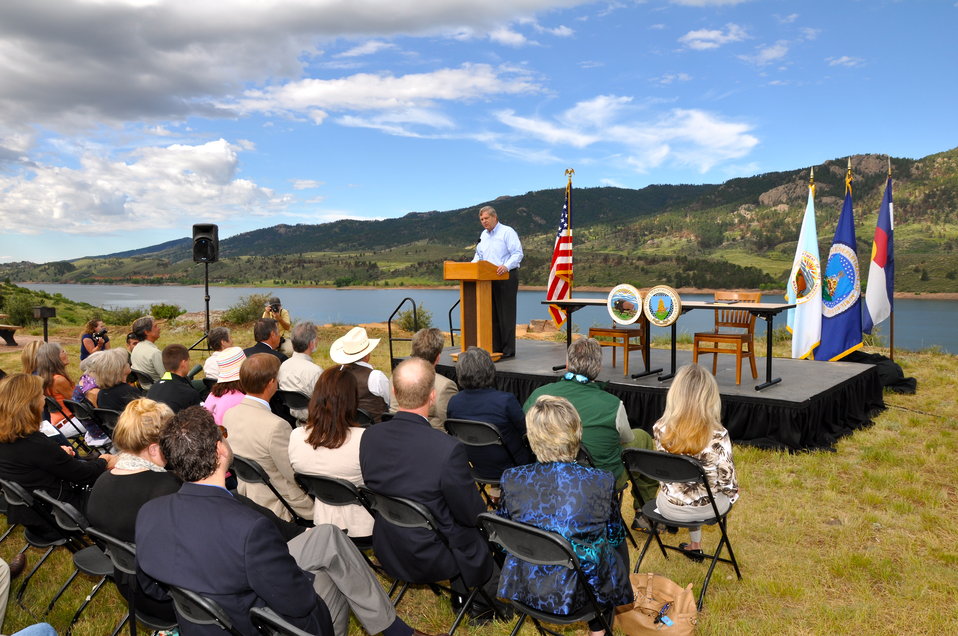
Agriculture Secretary Tom Vilsack speaks at the Memorandum of Understanding (MOU) signing held at the Horsetooth Reservoir in Fort Collins, CO on Jul. 19, 2013. This MOU will facilitate activities such as wildfire risk reduction through forest thinning, prescribed fire and other forest health treatments; minimizing post-wildfire erosion and sedimentation; and restoring areas that are currently recovering from past wildfires through tree planting and other habitat improvements.